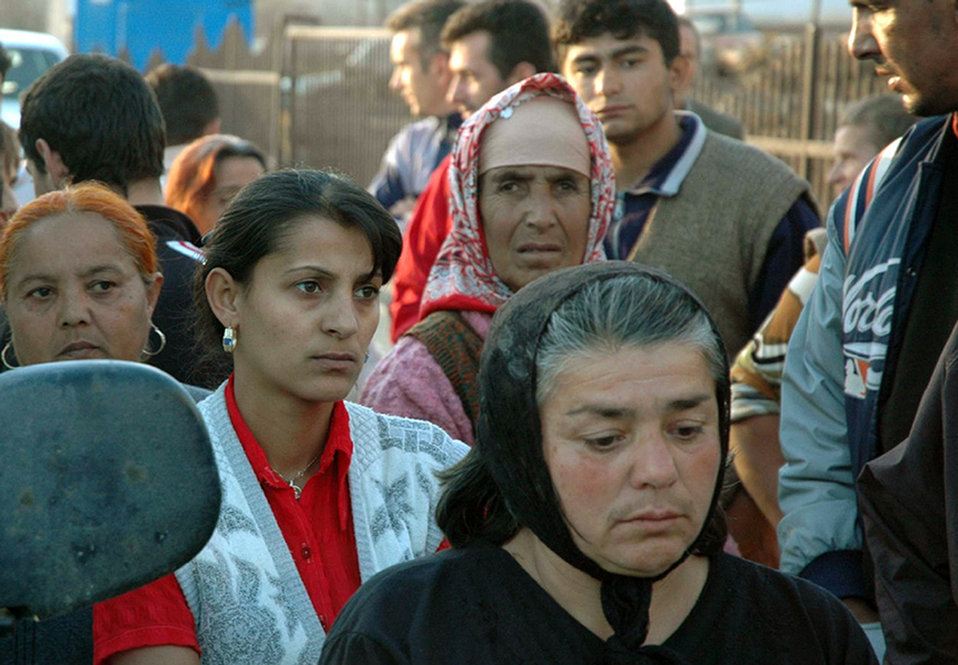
Humanitarian mission

NOVO BRDO, Kosovo (AFPN) -- People of the Novo Brdo region of Kosovo wait to receive a distribution of much-needed items by U.S. Kosovo Force personnel during a humanitarian mission.